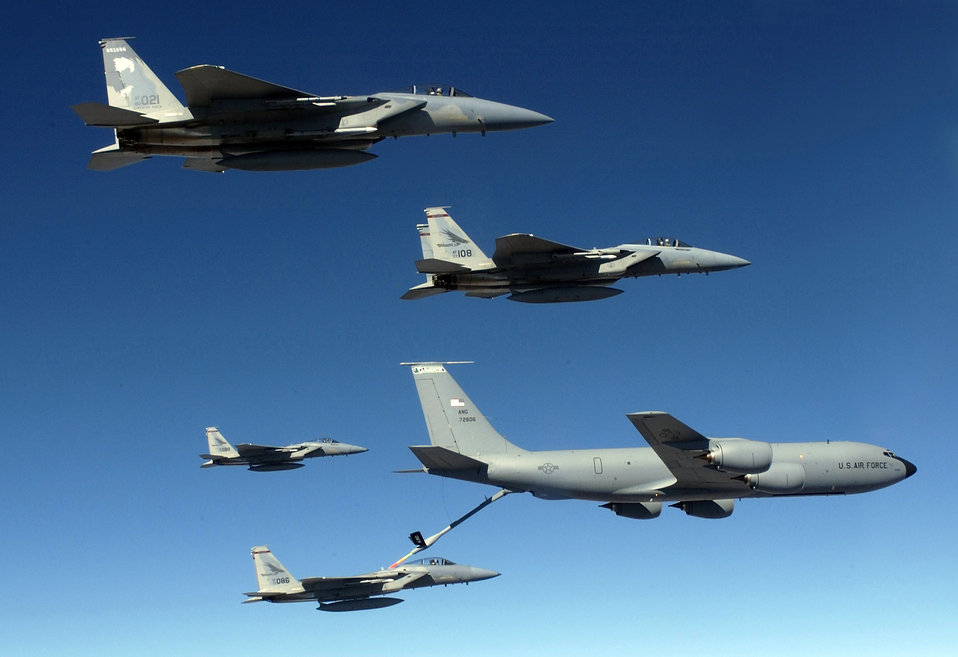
Tanker hits top of the charts for recapitalization priority

The KC-135 Stratotanker, like the one shown here refuelling F-15 Eagles, was featured recently on National Public Radio's Morning Edition.